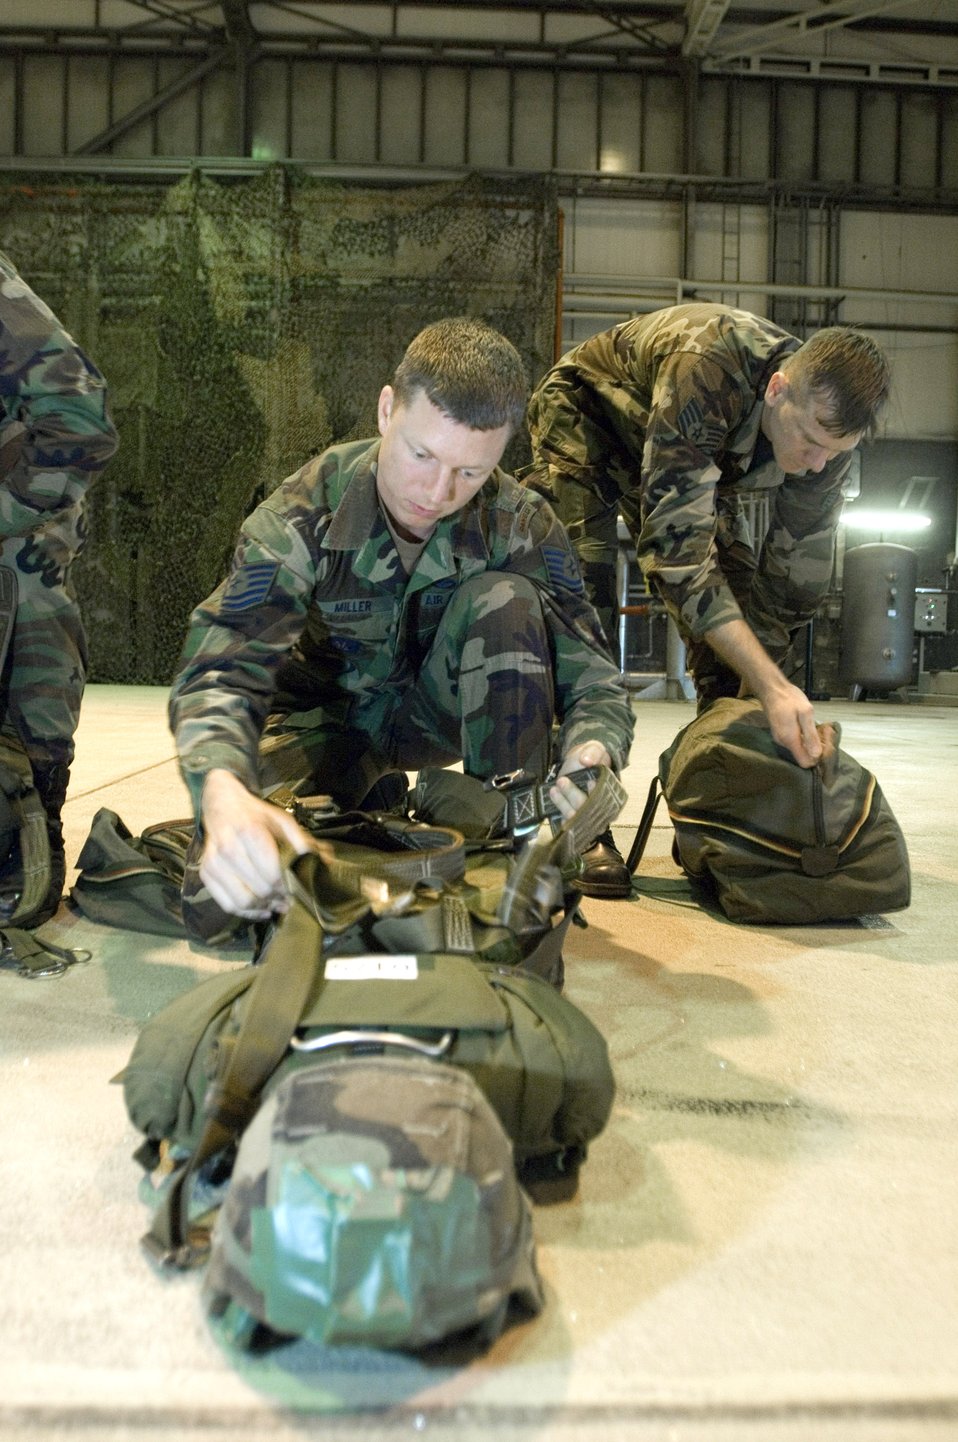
Multinational training

Tech. Sgt. Michael Miller (front) and Staff Sgt. Benjamin Burk prepare their parachutes for the day's mission at Ramstein Air Base, Germany, on Thursday, April 27, 2006. The sergeants are with the 786th Security Forces Squadron's airborne operations section at Sembach Air Base, Germany.